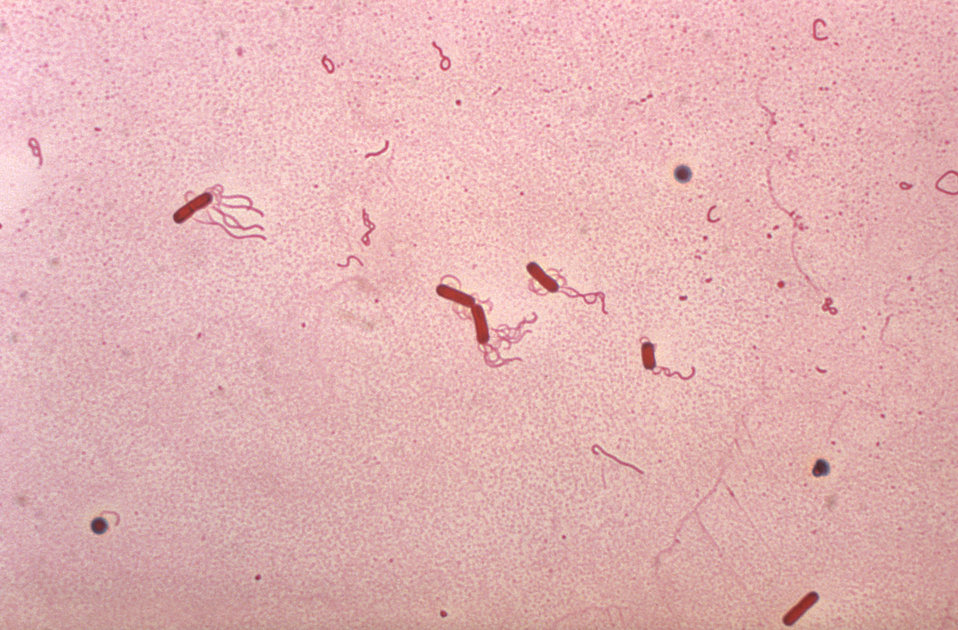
Bacillus brevis. flagella stain.